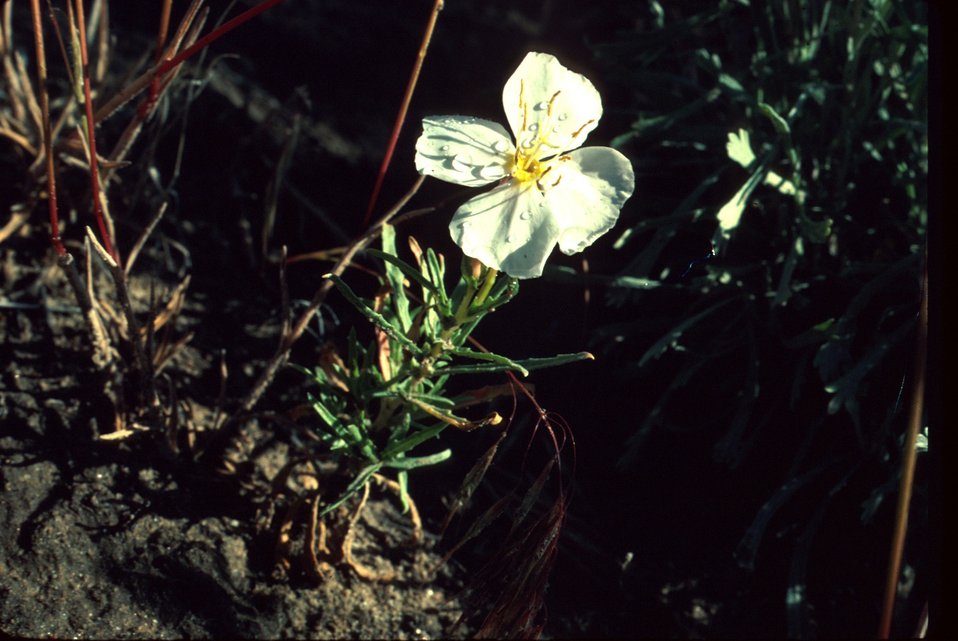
Oenothera pallida Wildflower